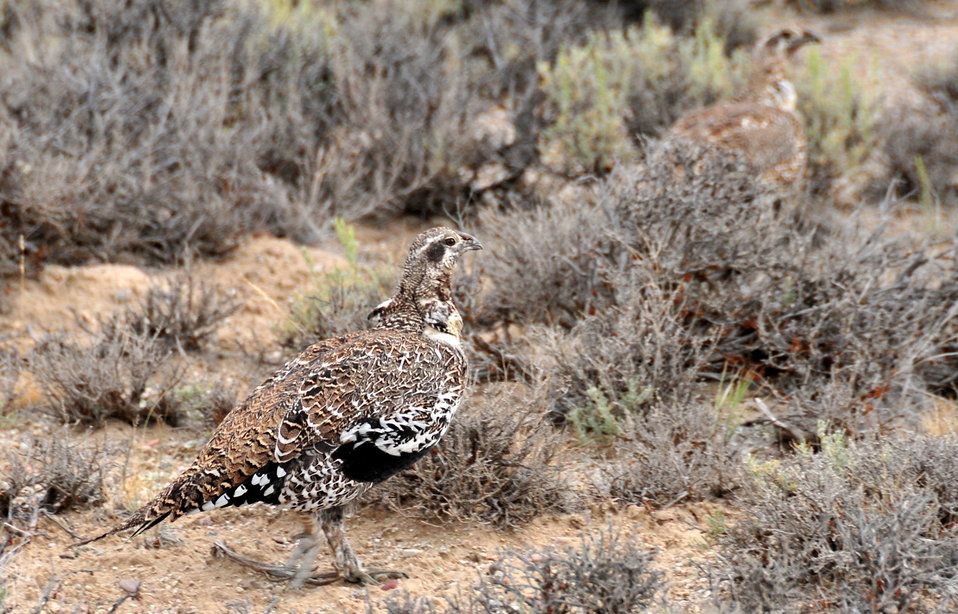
Sage-grouse on Seedskadee NWR

A group of sage grouse on Seedskadee National Wildlife. Refuge.